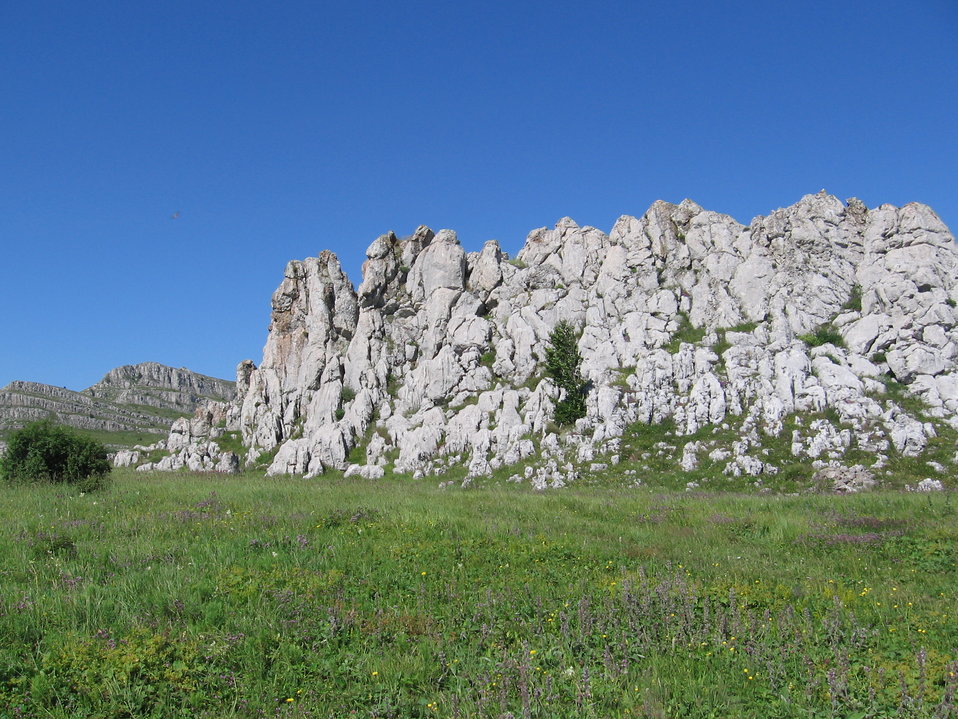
Українська: Бабуган: Фото